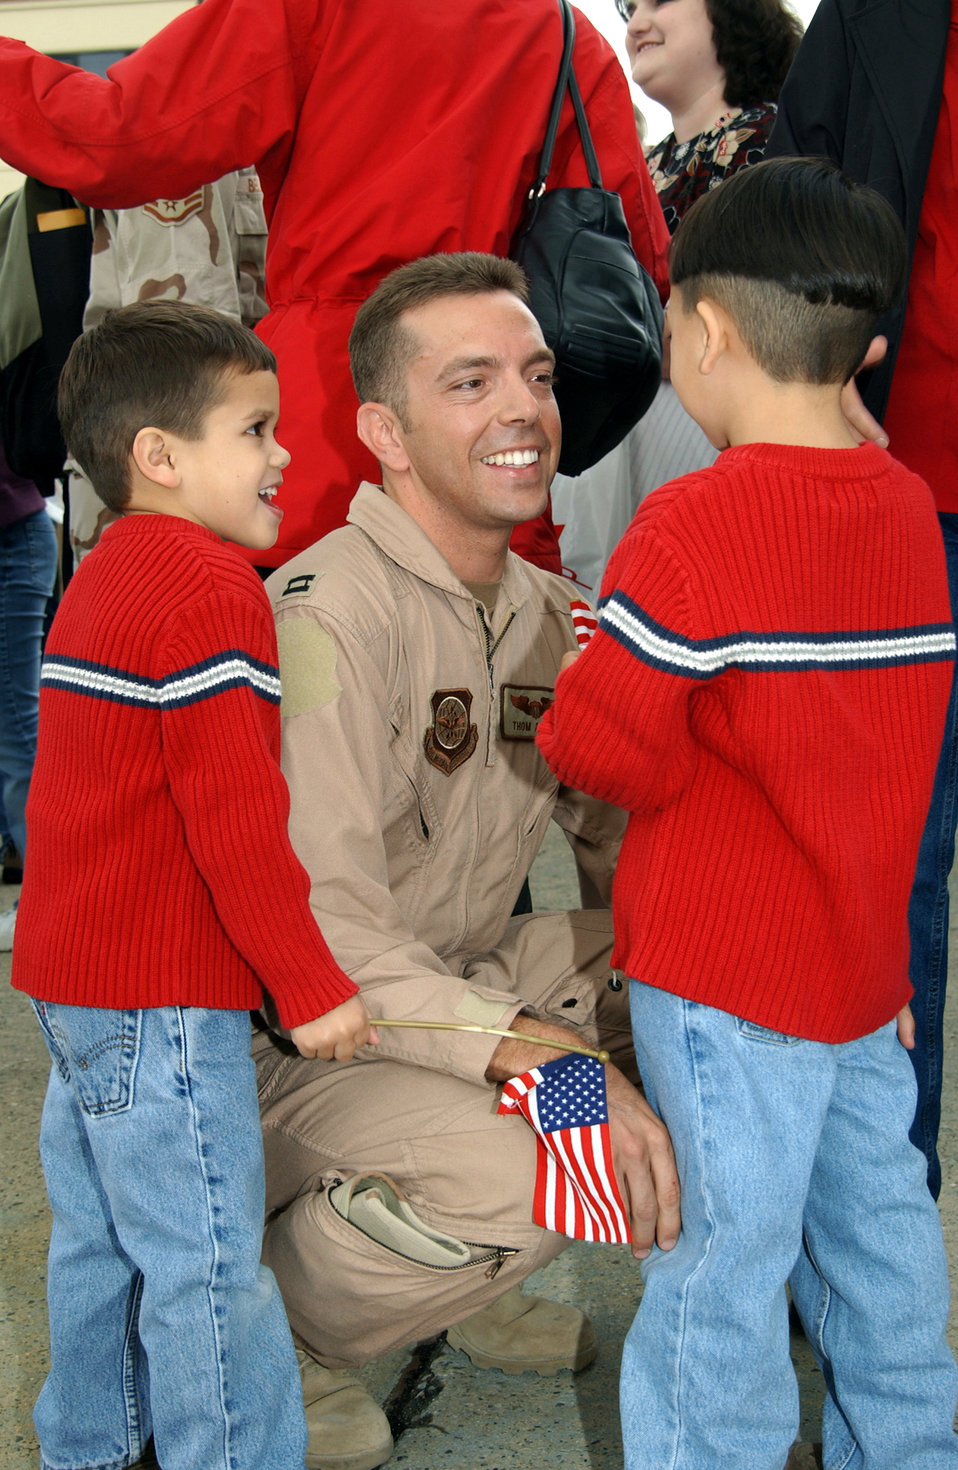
Surrounded by love

TRAVIS AIR FORCE BASE, Calif. (AFPN) - Capt. Thom Adkins greets his sons, Thomas (right) and Zach, after returning home from a long deployment supporting Operation Iraqi Freedom. Adkins is assigned to the 60th Operation Support Squadron here. More than 100 Travis airmen returned home April 29.